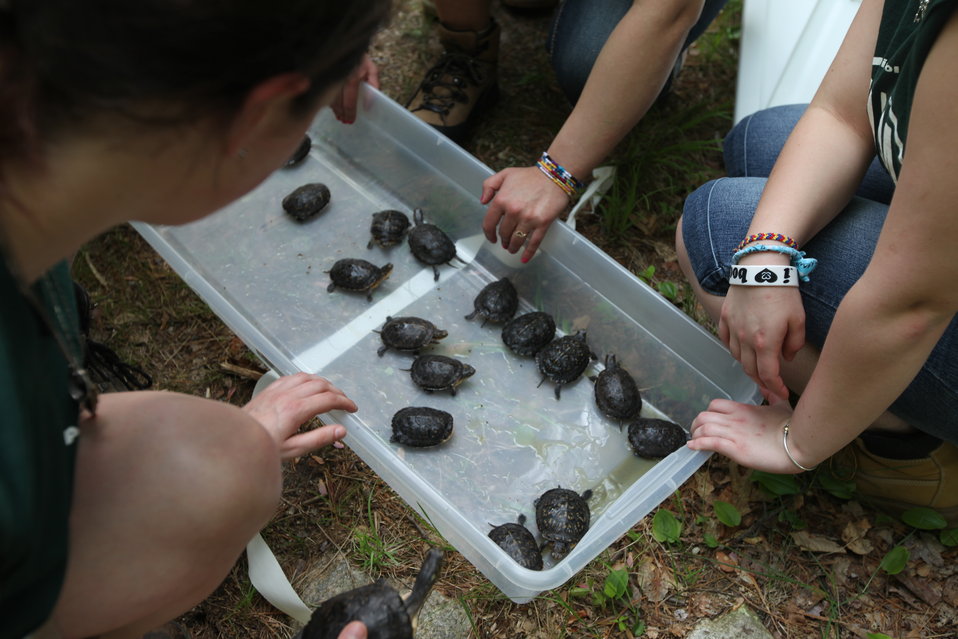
Turtles Getting Ready to be Released

Blanding's turtle release, Assabet River, MA.